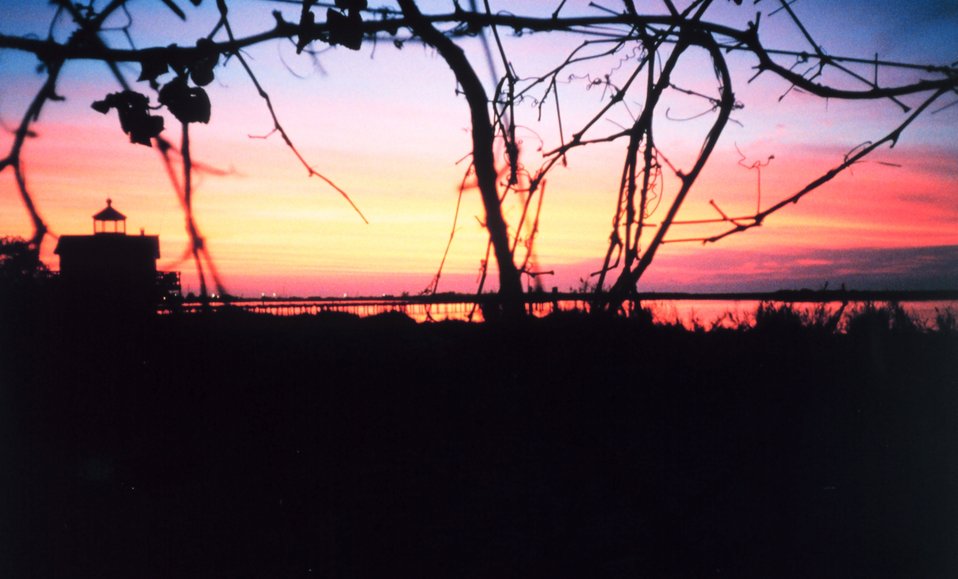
Sunset over Chesapeake Bay from Port Isobel